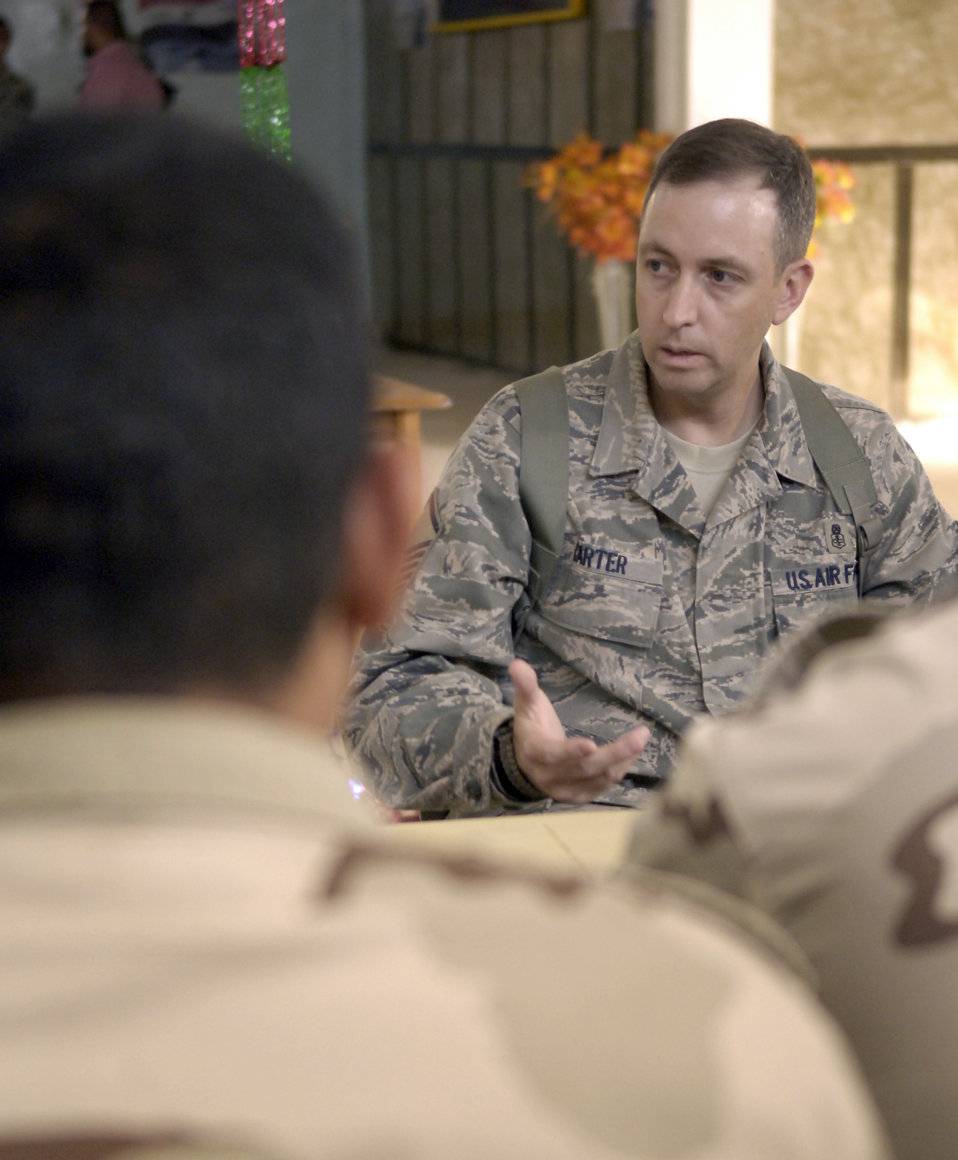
PME graduation

Master Sgt. Brian Carter discusses with a group of junior Iraqi airmen the Air Force core value of Integrity First, during an NCO professional development course April 27, 2011, at New Al-Muthana Air Base, Iraq. U.S. Airmen with Iraq Training and Advisory Mission-Air and the 447th Air Expeditionary Group taught the course designed to help the Iraqi Air Force develop its NCOs into stronger leaders. Sergeant Carter is an ITAM-Air medical adviser.